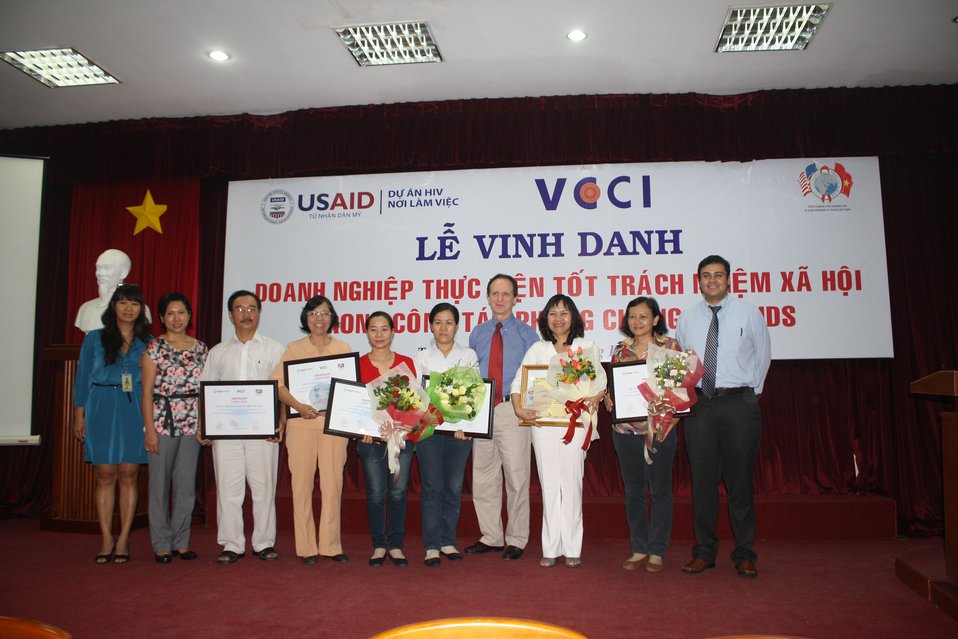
USAID and VCCI present certificates to enterprises active in HIV awareness and support

Award ceremony in Ho Chi Minh City on November 16, 2011